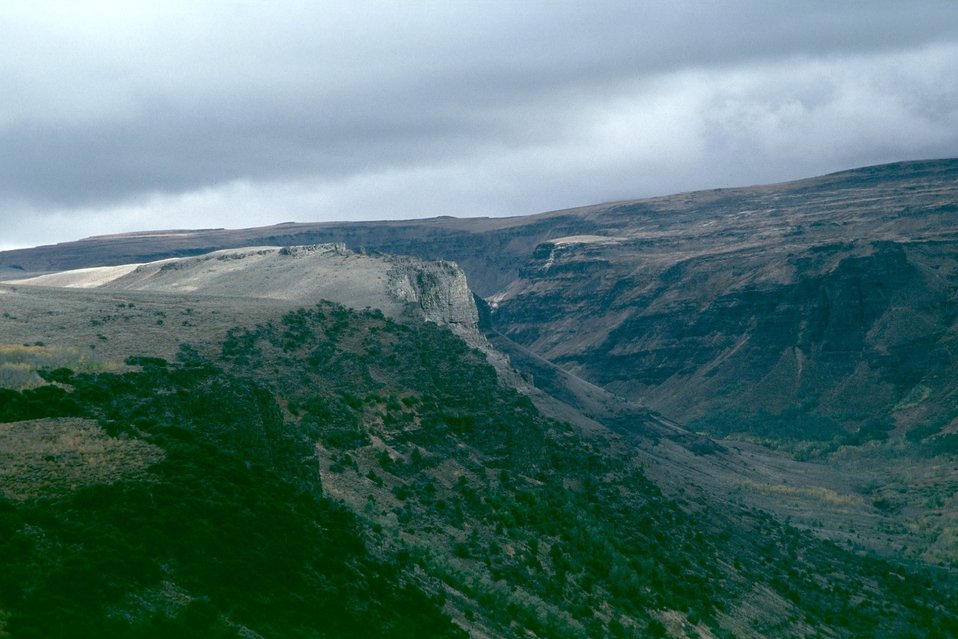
Little Blitzen looking East from Pruitt Overlook, Steen's Mountain.